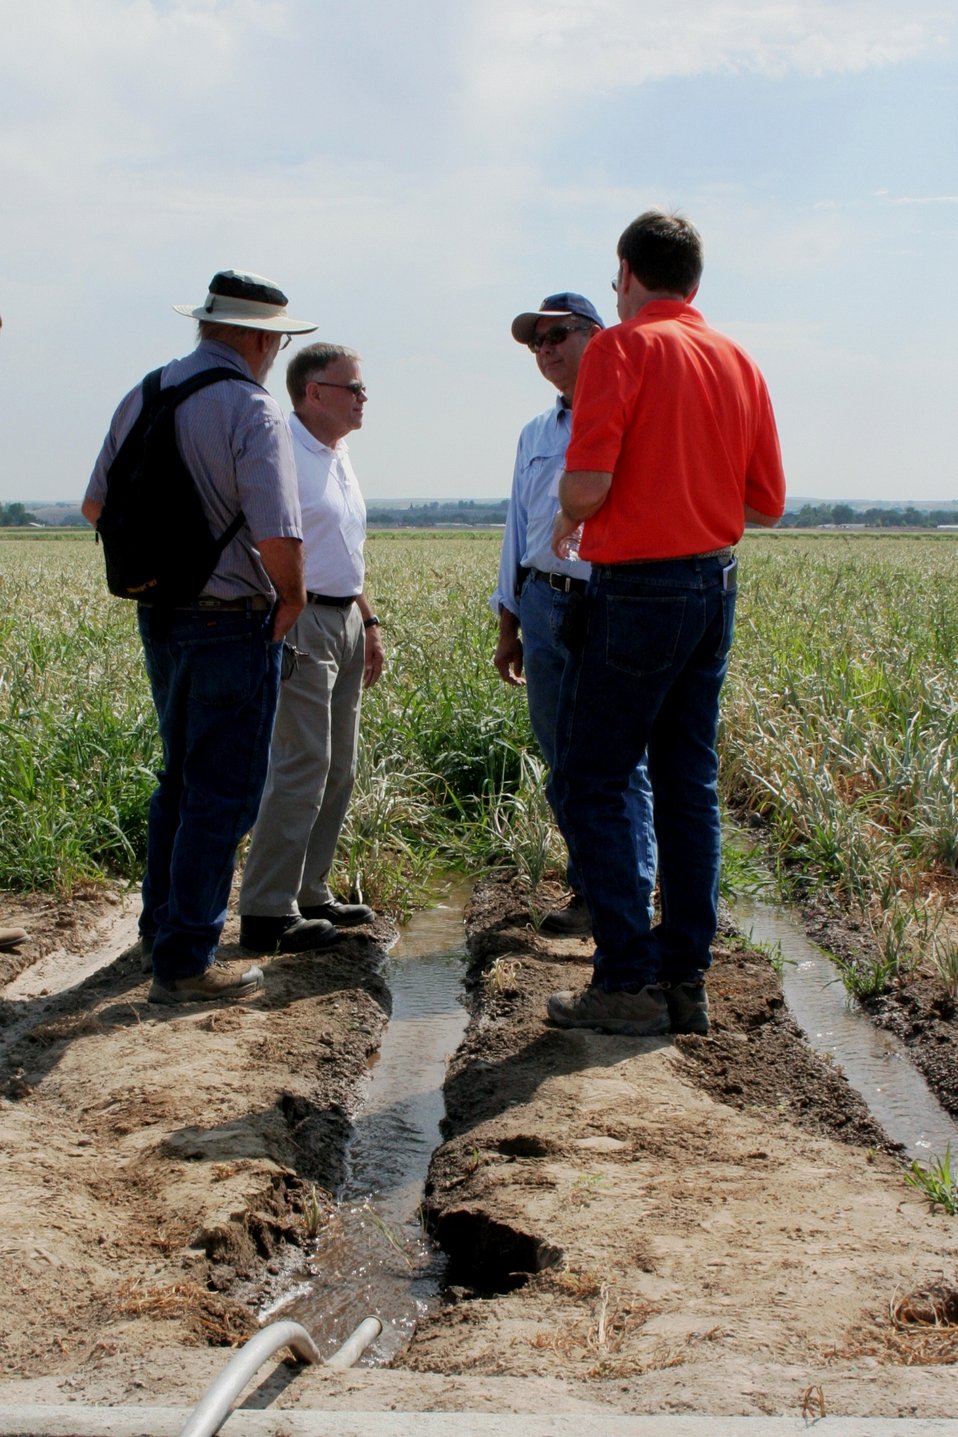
On the Road with Mike Taylor

FDA Deputy Commissioner Michael Taylor (center left) looking at furrow irrigation in a bulb onion field. Mike and colleagues started a five-day tour of the Pacific Northwest on Sunday, Aug. 11, 2013 -- visiting Idaho, Oregon and Washington -- to get a first-hand look at produce production and irrigation operations, and to discuss the proposed Produce Safety Rule with growers, food industry representatives and state officials. For more about Mike's multi-region tour, read these FDA Voice blog posts:

• Hearing the Concerns of Maine Growers Striving for Agricultural Diversity
• On the Road with Mike Taylor: Touring the Pacific Northwest
• On the Road with Mike Taylor, Day 2: Frank Talk in Farm Country
• On the Road with Mike Taylor, Day 3: Families and Partnerships
• On the Road with Mike Taylor, Day 4: Looking to the Future